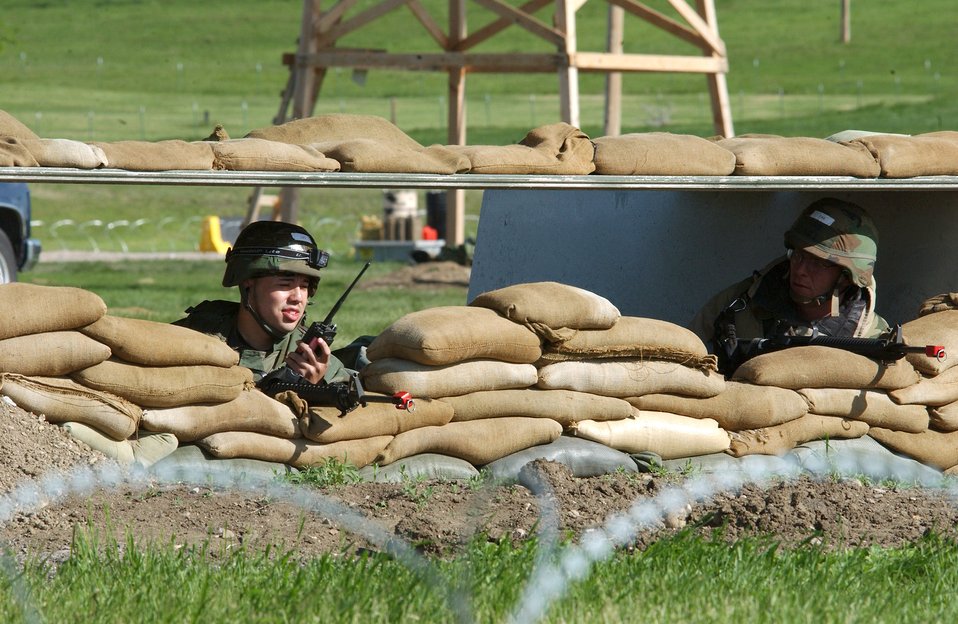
Operational readiness exercise

Airmen from the 28th Bomb Wing take cover in a bunker during a simulated ground attack, part of an operational readiness exercise at Ellsworth Air Force Base, S.D., on Wednesday, May 24, 2006.